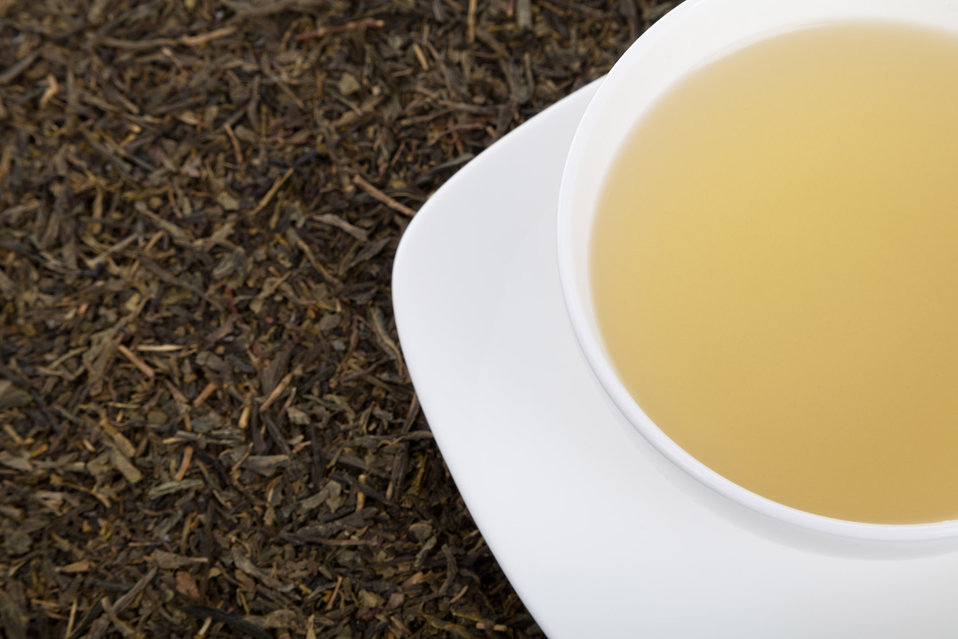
A cup of a green tea with green tea leaves background.